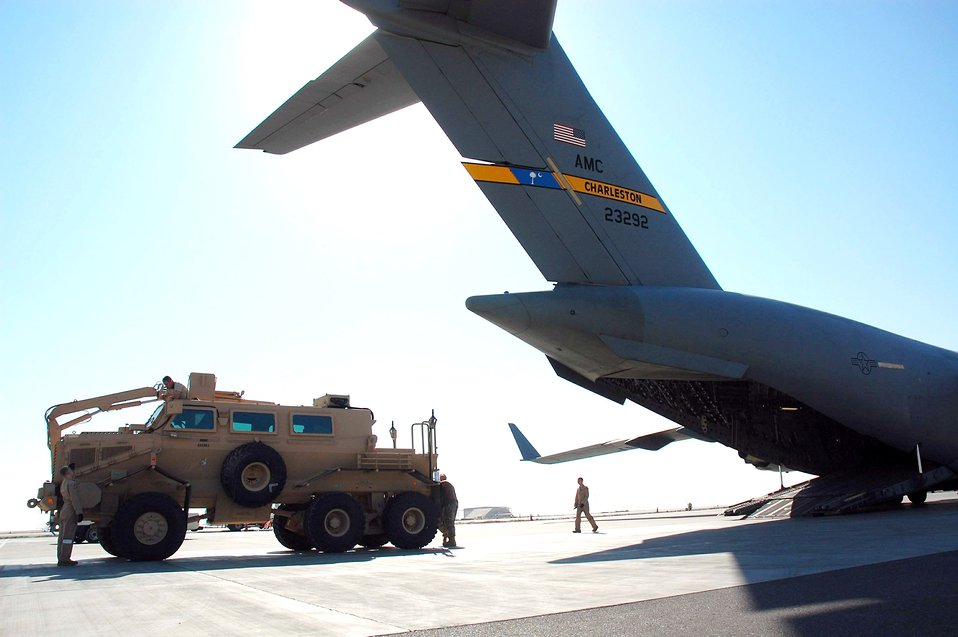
To serve and protect

Airmen from the 386th and 379th Air Expeditionary Wings load a mine resistant ambush protected vehicle onto a C-17 Globemaster III from Charleston Air Force Base, S.C., Dec. 28 in Southwest Asia. The MRAP was heading to Iraq and is designed to help protect military members from mines and improvised explosive devices. The C-17's aircrew members are from McGuire AFB, N.J., and currently deployed to an air base in the Middle East.